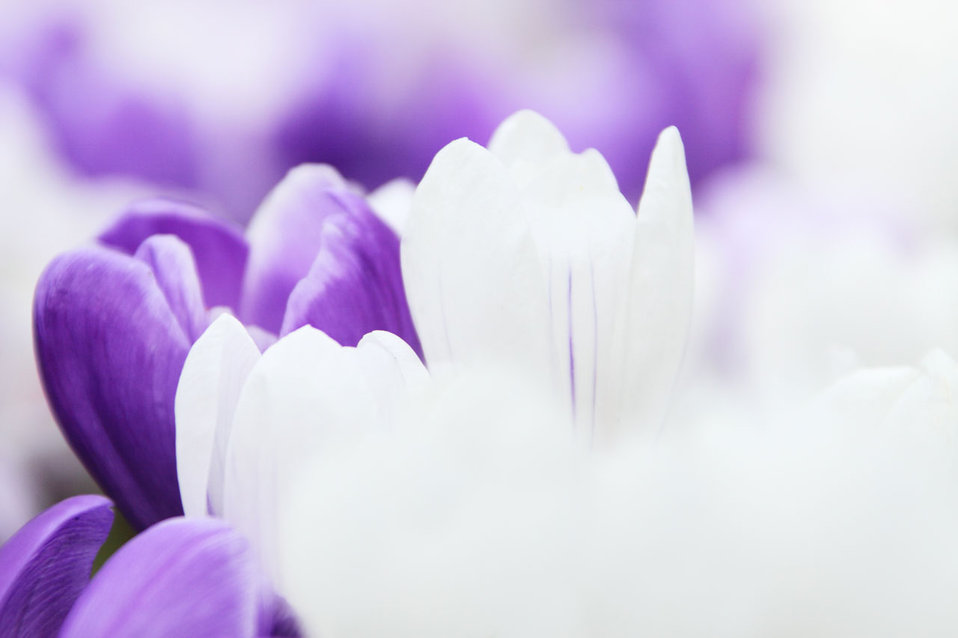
Crocus background wallpaper image.